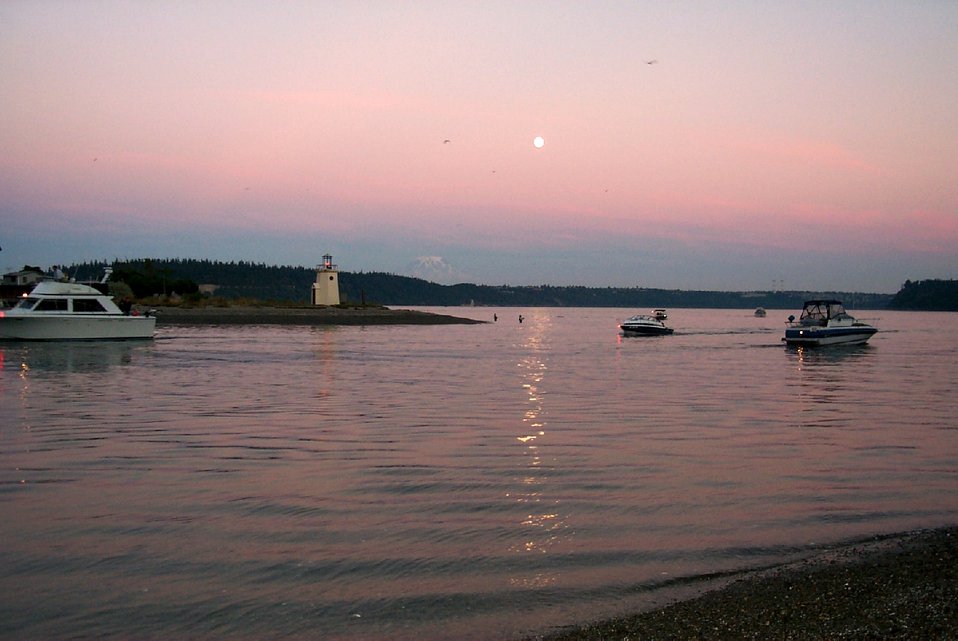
Moonrise over Gig Harbor as salmon fishermen try their luck in the shallows off the spit. Pleasure boaters are returning to harbor as the day ends. Mt. Rainier is visible in the left center.